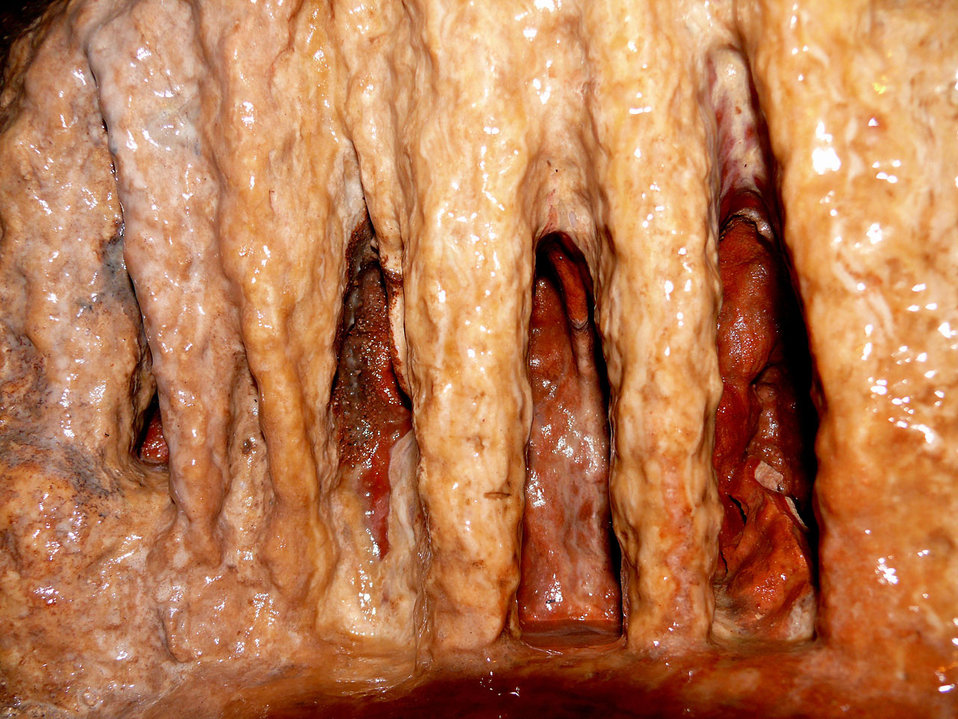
Kents cavern

Cave in torquay.